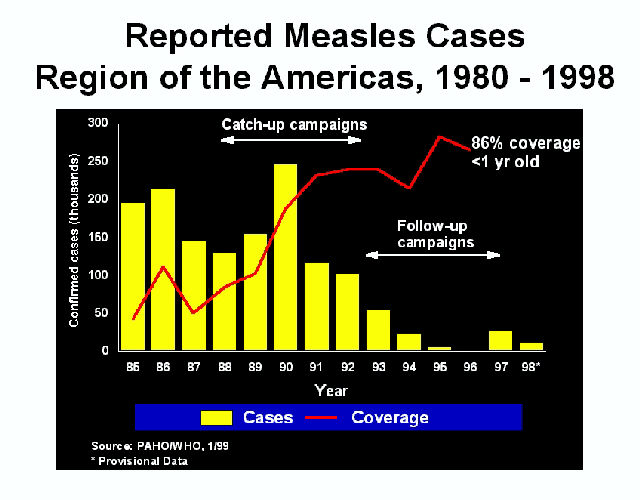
Reported measles cases. Region of the Americas, 1980 - 1998.